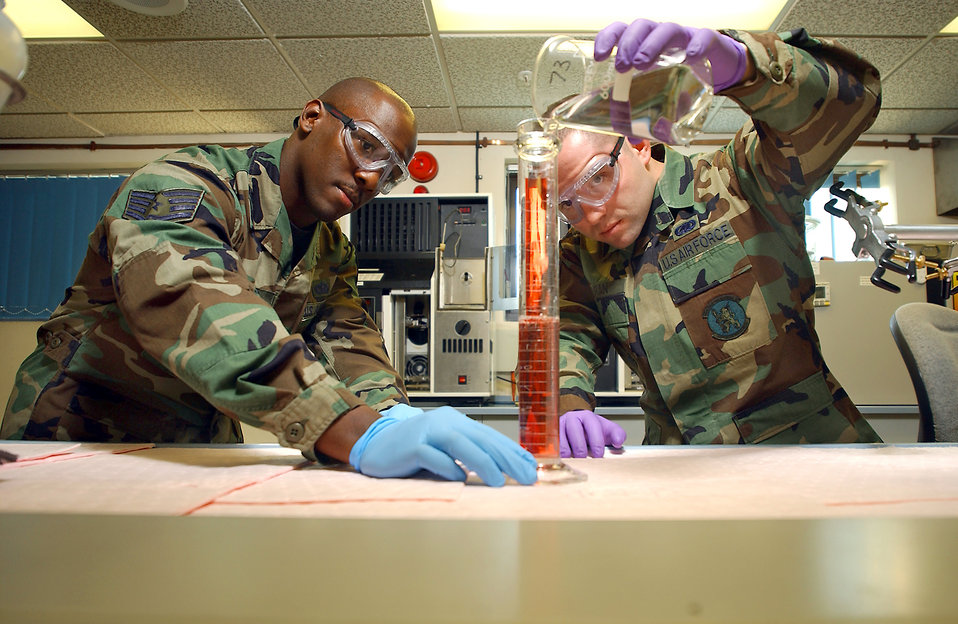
Fuel Test

ROYAL AIR FORCE MILDENHALL, England -- Staff Sgts. Rasmus O. James, left, and Gregory Duran, perform a fuels system icing inhibitor test Oct. 27. The test is to ensure that the proper amount of fuels system icing inhibitor fluid is present to prevent any water in the fuel from freezing at high altitudes during flights. The staff sergeants are with 100th Logistics Readiness Squadron here.